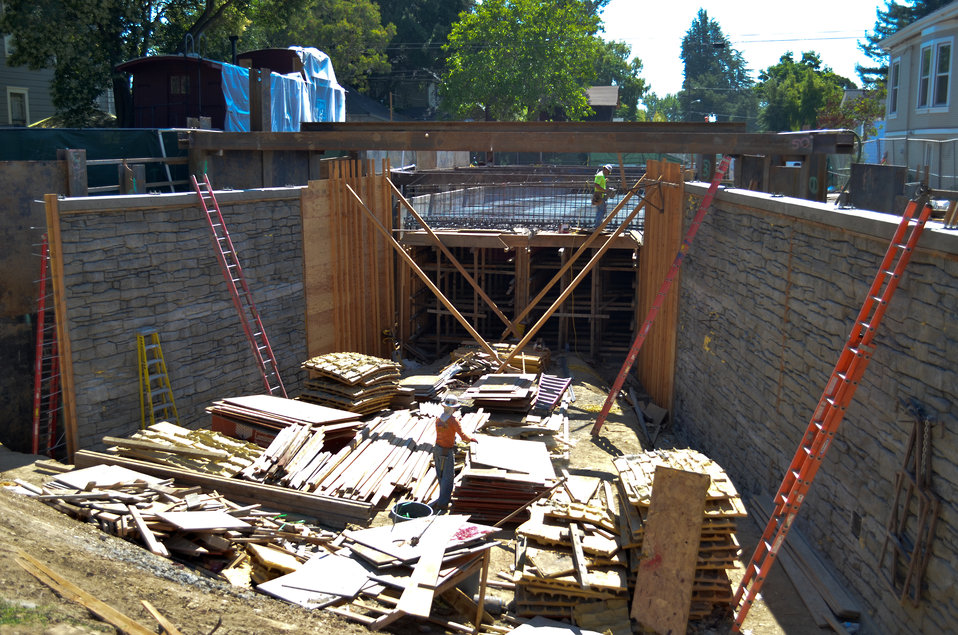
Workers prepare to place concrete for two new box culverts

Construction workers prepare to place concrete for two new box culverts in Napa, Calif., July 10, 2012. The underground structures will help route water from Napa Creek to Napa River during high water. The $14.8 million flood risk reduction and habitat restoration project is funded by the American Recovery and Reinvestment Act of 2009 and is a joint effort by the U.S. Army Corps of Engineers Sacramento District, the city of Napa and the Napa Flood Control and Water Conservation District.